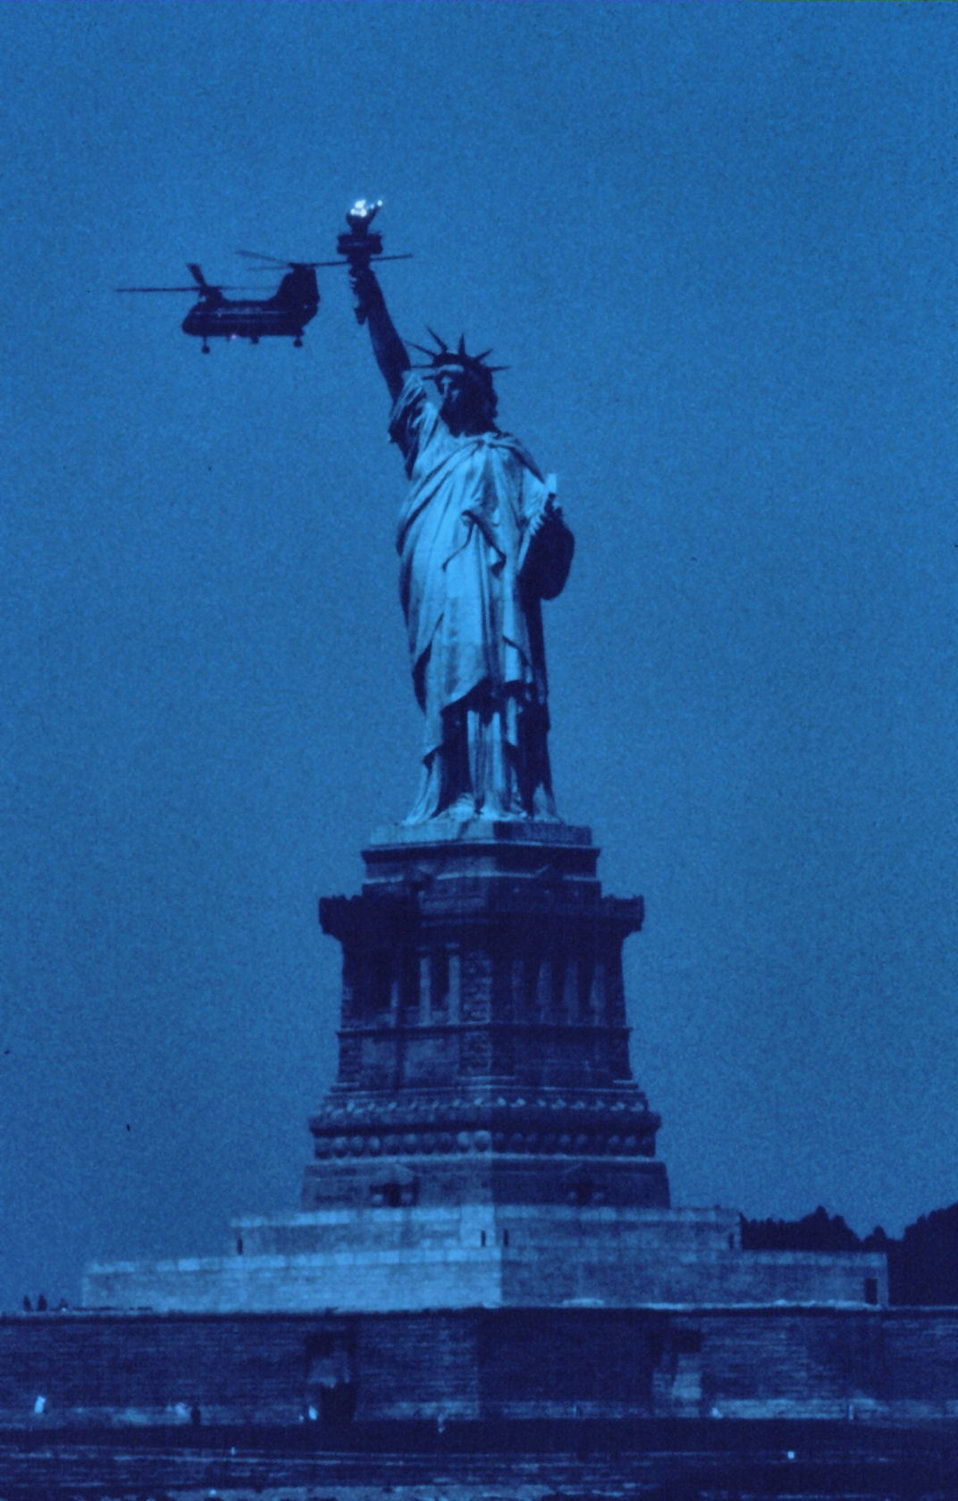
The Statue of Liberty, New York Harbor, with Navy helicopter during 1976 Bicentennial Tall Ship celebration